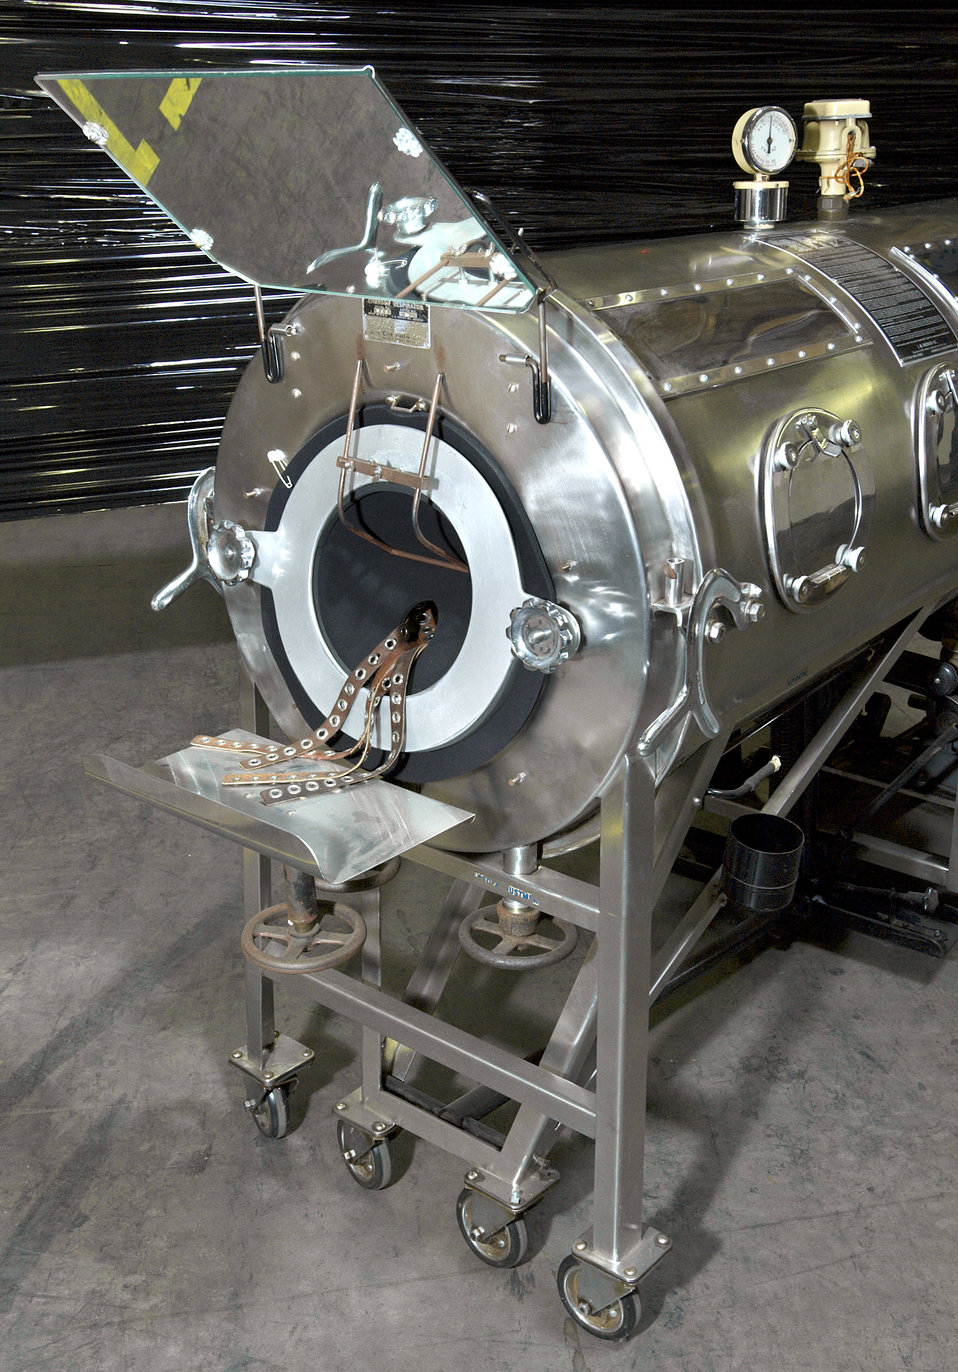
This photograph depicts an anterior, or front view of an Emerson respirator, more commonly referred to as an 'iron lung.' Devices such as these were used by polio patients whose ability to breath was paralyzed due to this crippling viral disease.